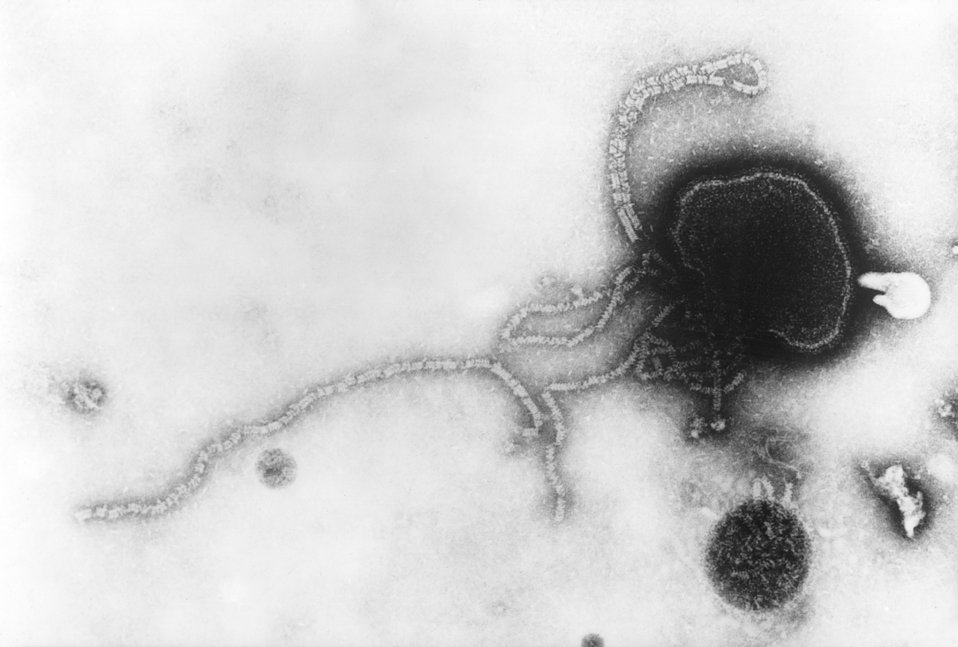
Transmission electron micrograph (TEM) of parainfluenza virus.